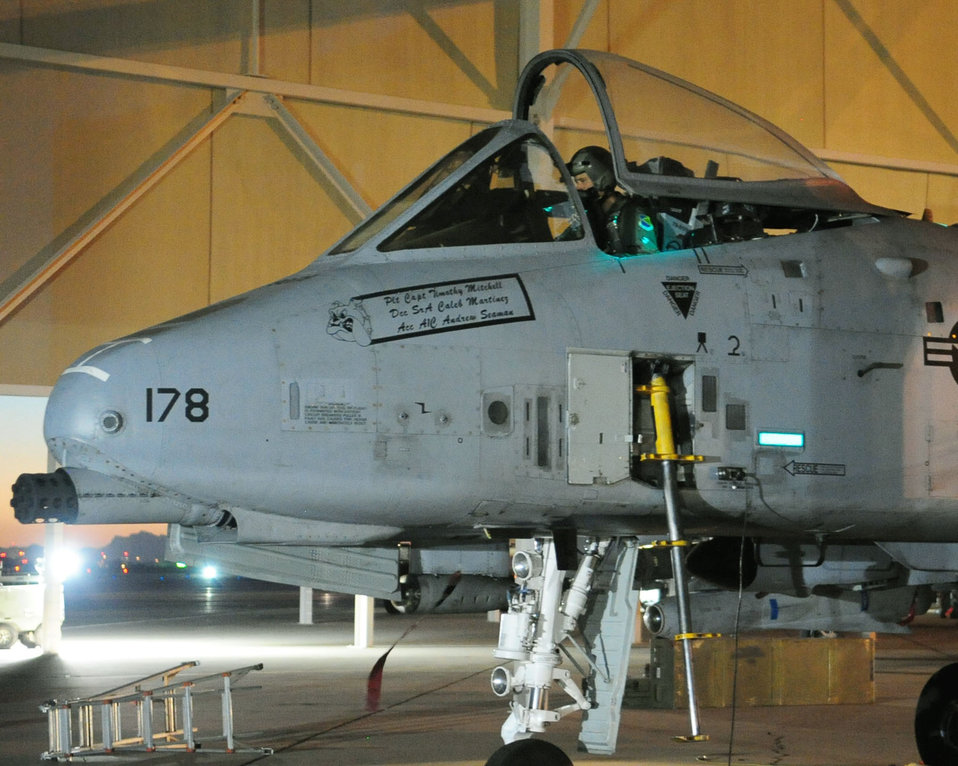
A-10 qualification

The canopy of his A-10C Thunderbolt II lowers as 1st Lt. Dan Griffin, a pilot from the 358th Fighter Squadron at Davis-Monthan Air Force Base, Ariz., prepares to taxi out for his second of eight night flying missions June 23, 2010. Lieutenant Griffin is a student in the A-10C Pilot Initial Qualification course and as part of his training requirements he must learn to execute night flying missions using night vision goggles. He will accomplish this training through six hours of academic classes, five hours in the A-10 flight simulator and training flights.